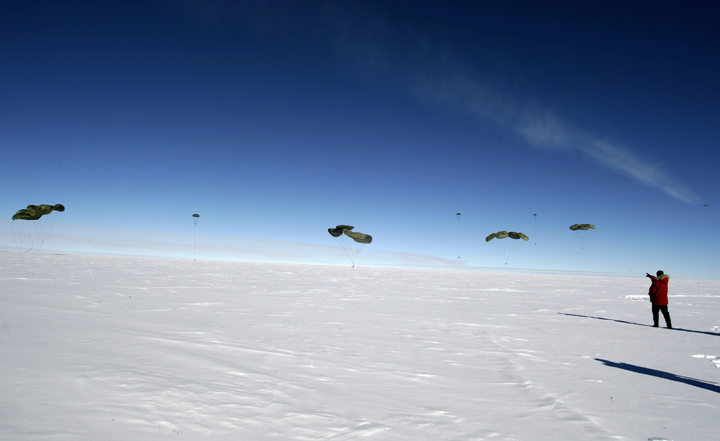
C-17 makes its first South Pole airdrop

Pallets of cargo fall to the ice Dec. 20 during the first C-17 Globemaster III airdrop to the South Pole. Airmen from the 62nd and 446th Airlift Wings at McChord Air Force Base, Wash., delivered 70 tons of supplies to the National Science Foundation team wintering there. The mission was a